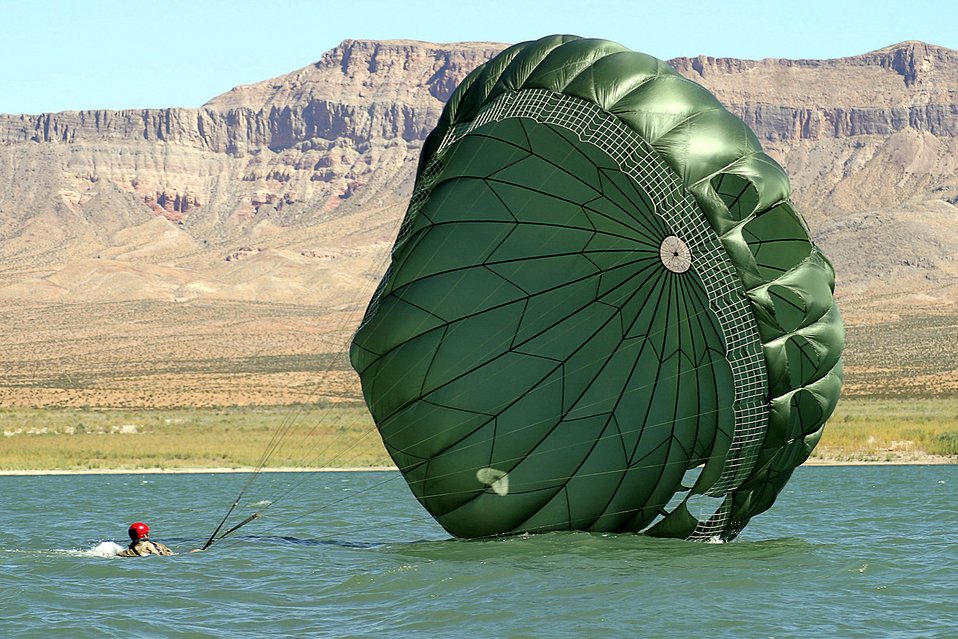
'Guardian Angels' train for rescue, recovery

NELLIS AIR FORCE BASE, Nev. -- Senior Airman Christopher Harding gathers his parachute after landing in Lake Mead. A pararescueman with the 55th Rescue Squadron here, he had just jumped out of a C-130 Hercules as part of a rescue and recovery exercise. The squadron has 16 pararescueman who were involved in recovery missions during Hurricane Katrina and Rita.